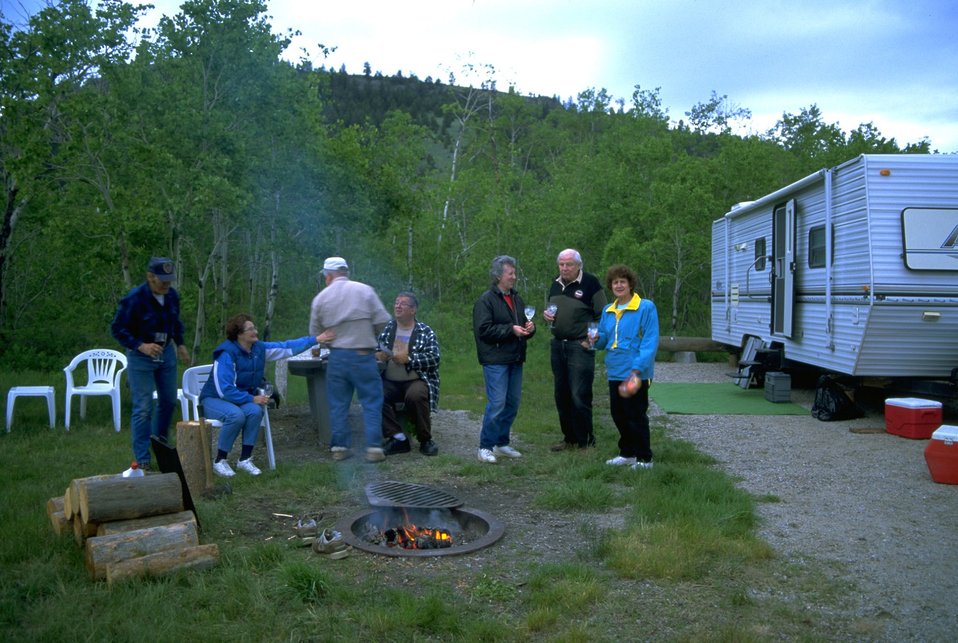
Campers around a fire pit at Divide Campground